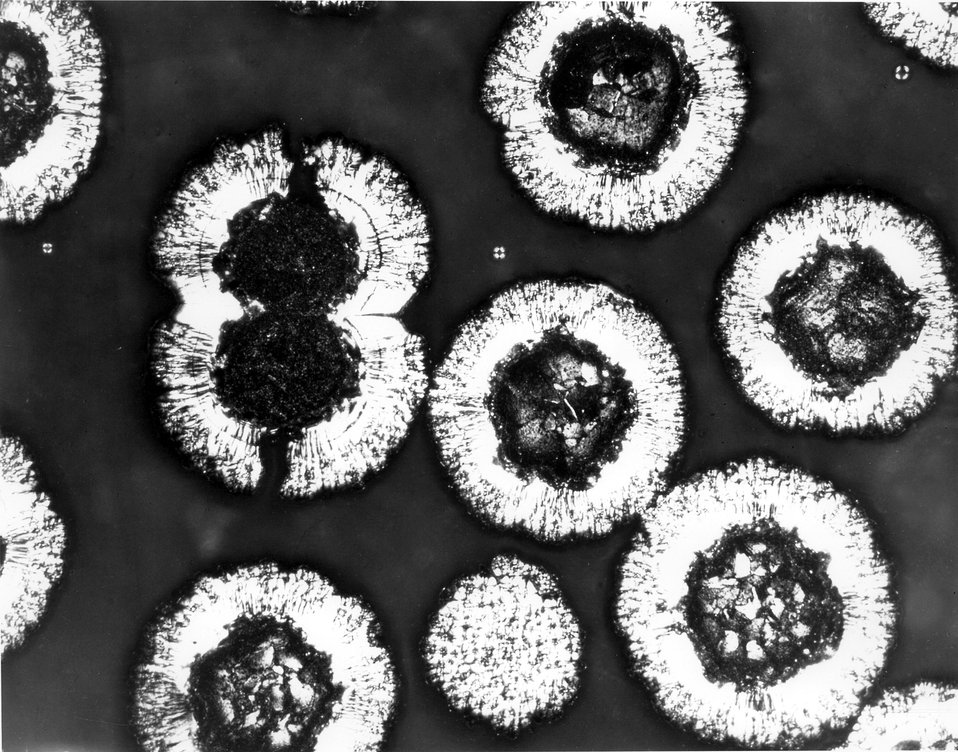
Cross section of prolifically coated uranium dis carbide fuel particles after irradiation. c. undated